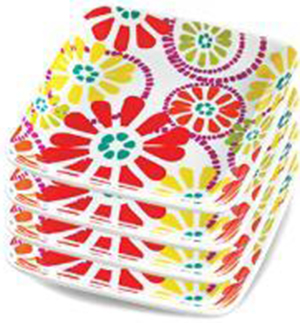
RECALLED – Marissa Tangerine Appetizer Plates

May 9, 2014 – Product Recall – Princess House, Inc. Voluntarily Recalls Marissa Tangerine Appetizer Plates Due to Cadmium and Lead Levels.